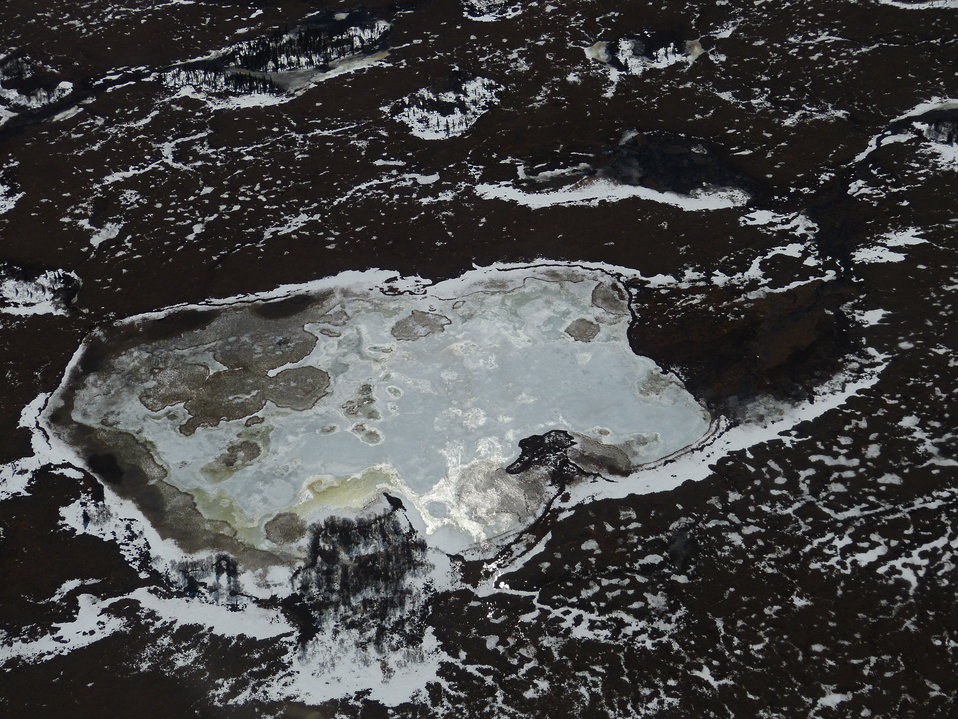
YDNWR 5-13-2013 KSowl (2)

Frozen lake, Yukon Delta National Wildlife Refuge, May 13, 2013

Photo credit: Kristine Sowl,
USFWS, YDNWR